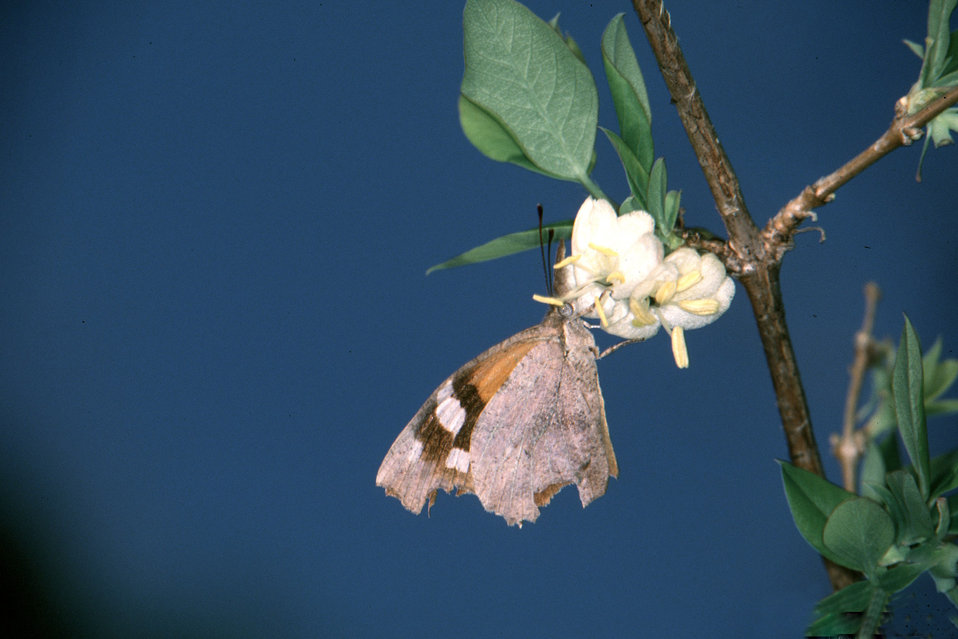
An American snout butterfly collects nectar from a flower. Butterflies are one of nature’s many pollinators for flowers and crops and are crucial in production for fruits and vegetables.